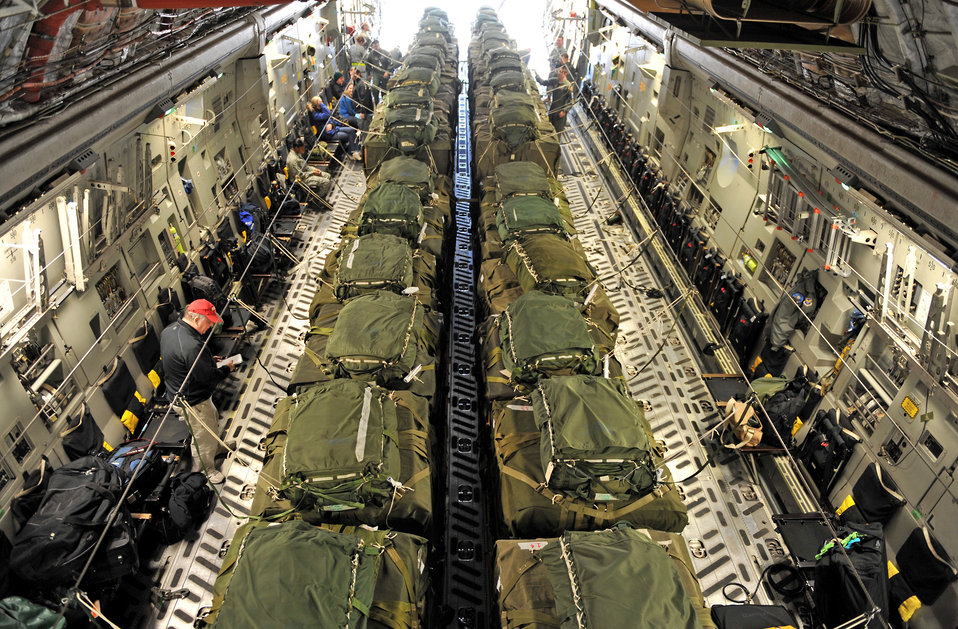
Operation Unified Response

A C-17 Globemaster III cargo aircraft is loaded with 40 pallets of relief supplies Jan. 18, 2010, at Pope Air Force Base, N.C., before taking off for a humanitarian mission to Haiti. The C-17, from Charleston Air Force Base, S.C., conducted the first humanitarian air delivery mission over Haiti. U.S. Southern Command is deploying assets to Haiti to conduct search and rescue operations, damage assessments and sustained humanitarian assistance and disaster relief operations.